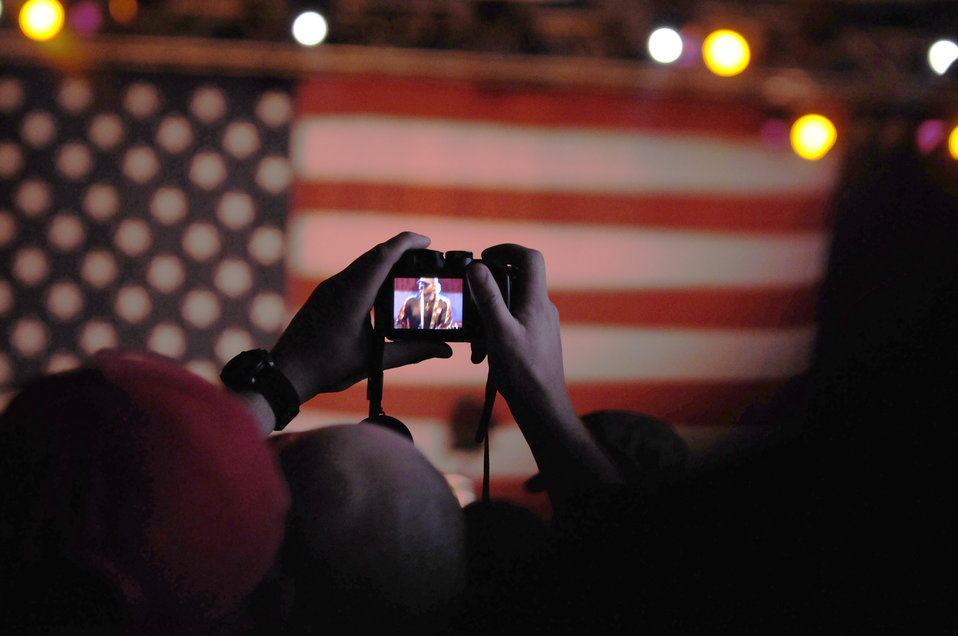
Country star entertains troops in Germany

A fan takes a photo of Toby Keith during a concert May 1, 2010, at Ramstein Air Base, Germany. Mr. Keith is a singer, songwriter and entertainer.